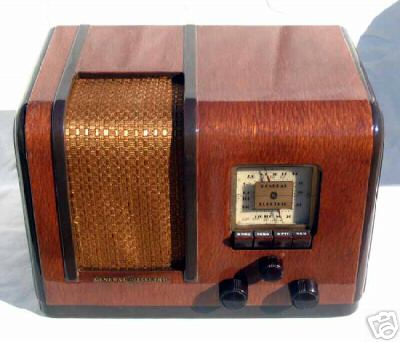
Português: Rádio GE 'Aero' -1936 Fotografia tirada por Cláudio de Castro. Domínio Público.